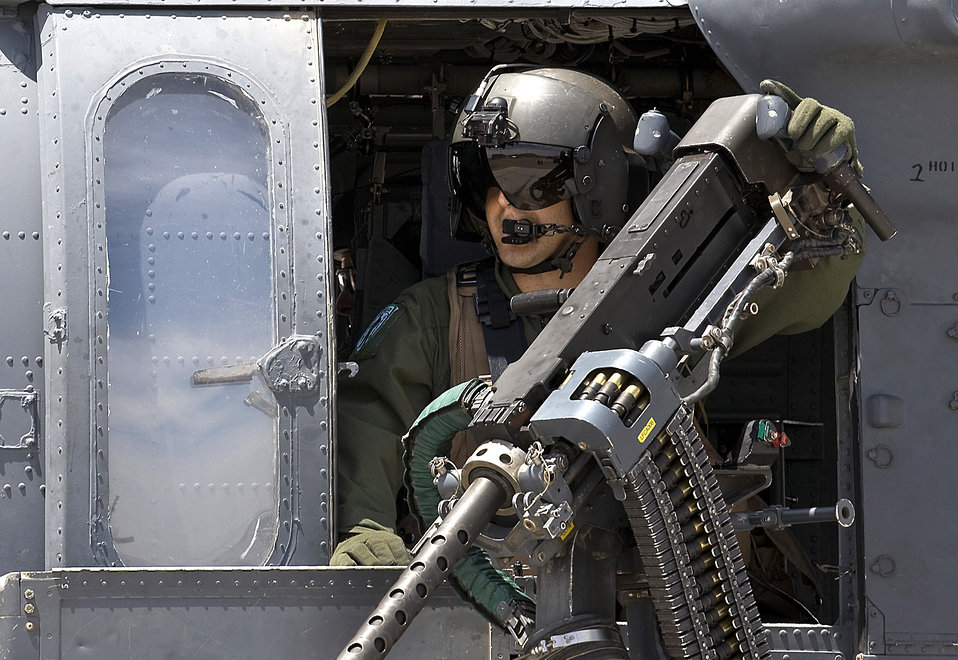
Armed and ready

Staff Sgt. Kevin Darosa waits to take off as part of a scramble exercise May 13, 2010, at the flightline at Nellis Air Force Base, Nev. Sergeant Darosa is an helicopter aerial gunner assigned to the 66th Rescue Squadron.